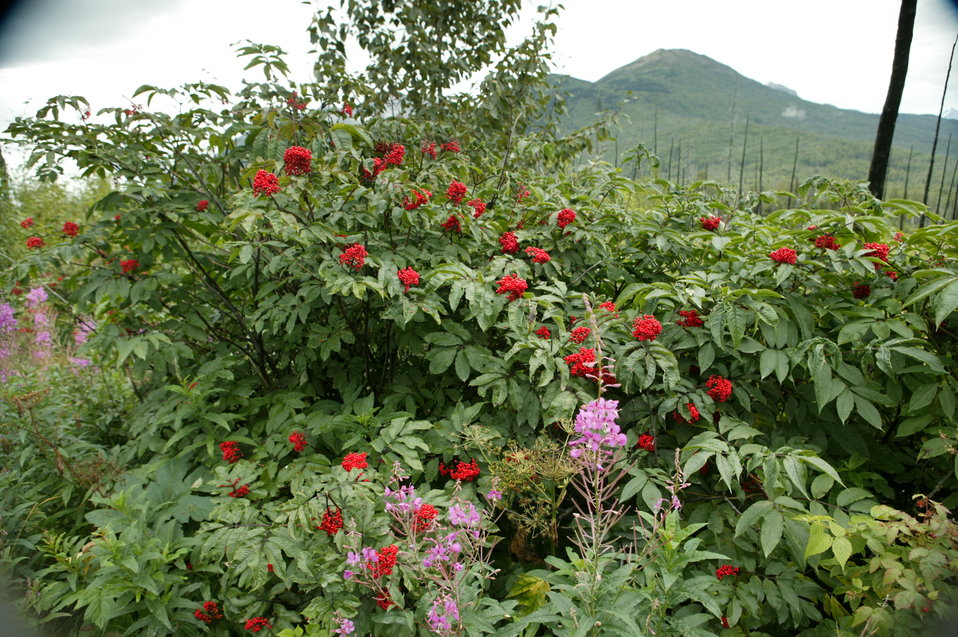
Red Elderberry, Fireweed and Wild Raspberry

Much of the lower altitudes of the Kenai National Wildlife Refuge are lush with vegetation. Many different berries and flowering plants grow here. Berry pickers have many varieties to choose from, Blueberry, Raspberry, Nangoon or Dew Berry, Crowberry, Watermelon Berry, High and Low Bush Cranberry, True Cranberry, Northern Red Currant and a small amount of Salmonberry can all be found on various parts of the refuge.